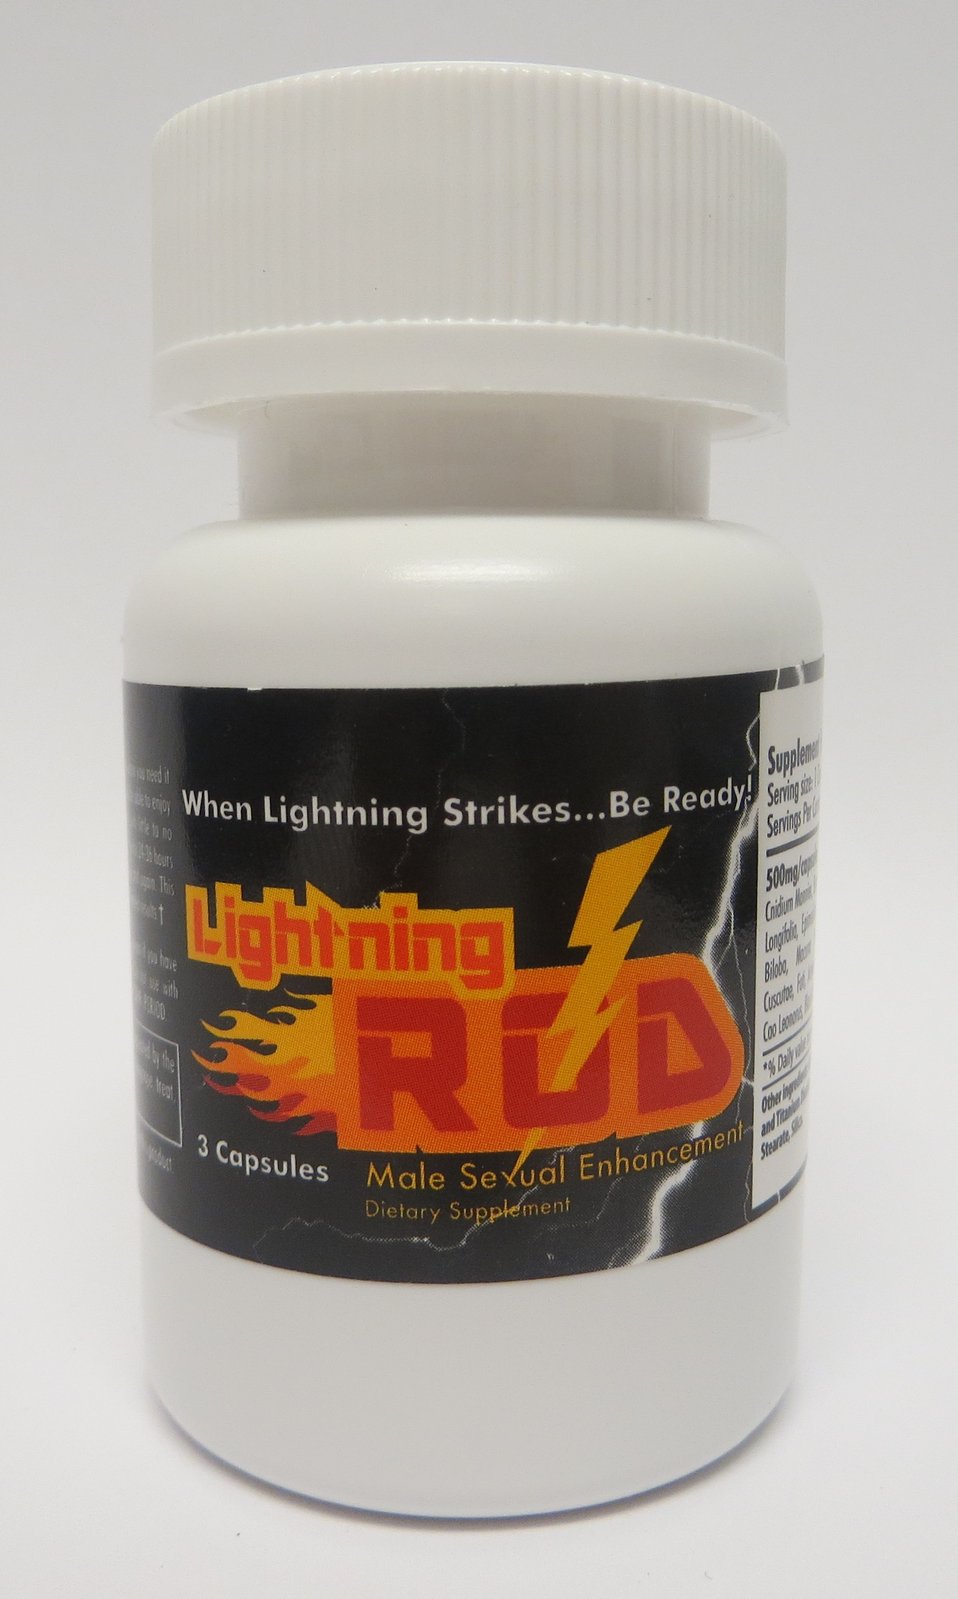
Lightning Rod

May 7, 2013 - The FDA is advising consumers not to purchase or use 'Lightning Rod,' a product promoted and sold for sexual enhancement. The product was found to contain an undeclared analogue of sildenafil. For more information, go to www.fda.gov/Safety/Recalls/ucm351058.htm.

And read this Consumer Update: Beware of Fraudulent ‘Dietary Supplements’